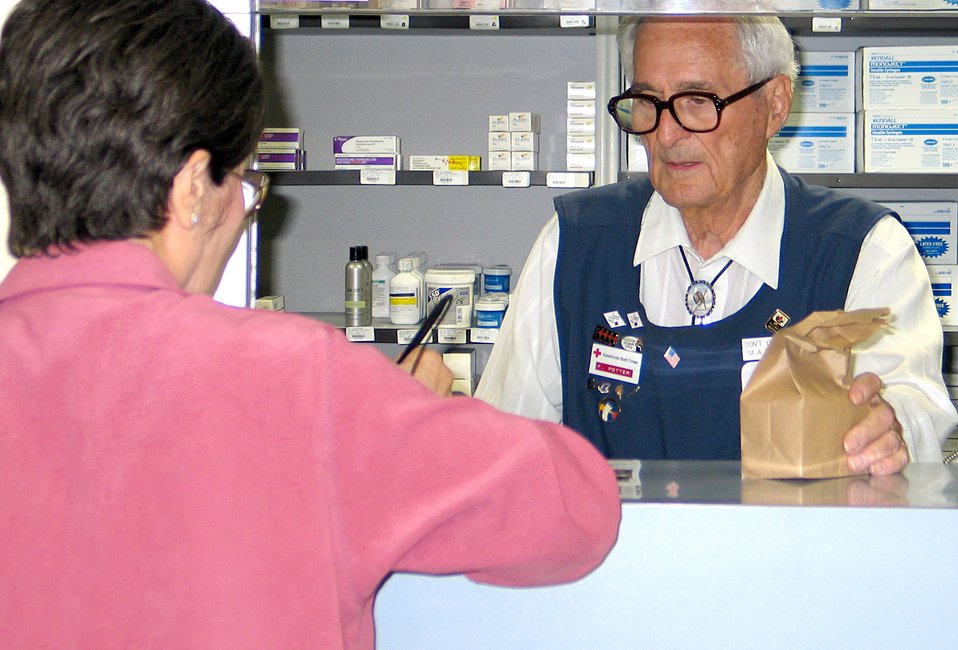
Pharmacy volunteer keeps history alive

Retired Col. Francis Potter refills a prescription May 2 in the refill pharmacy at Fairchild Air Force Base, Wash. Colonel Potter, who served in the Air Force from 1943-1969, has volunteered at the Fairchild pharmacy for the past 24 years.